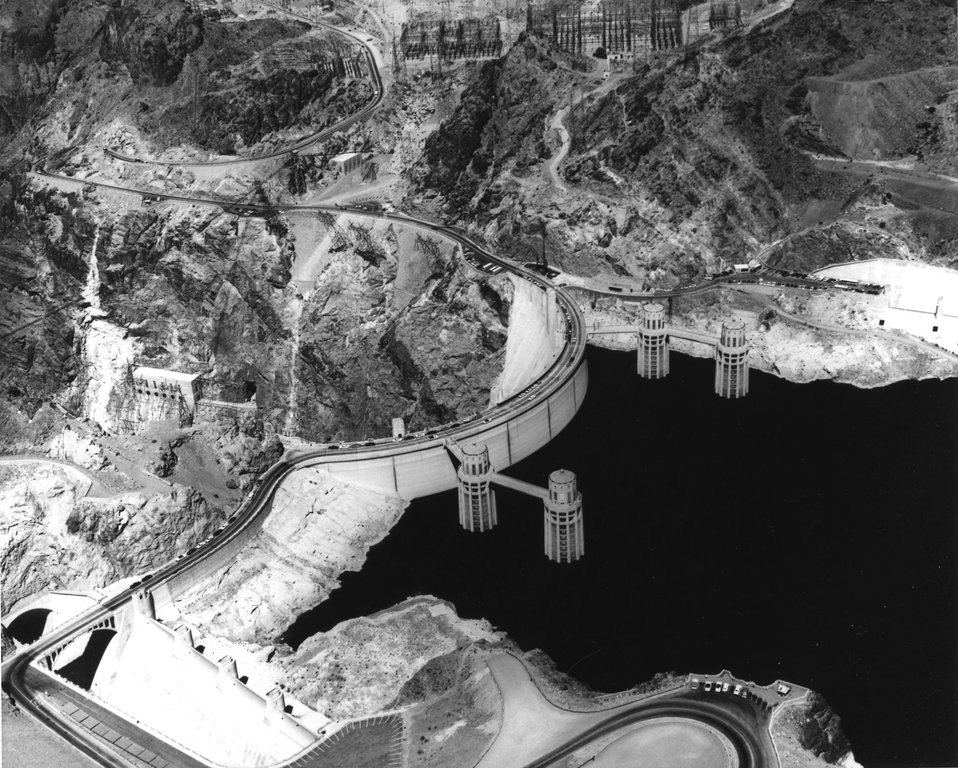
Aerial view looking southwest to Hoover Dam and Lake Mead. The Arizona spillway is shown in the left foreground. c. 1977